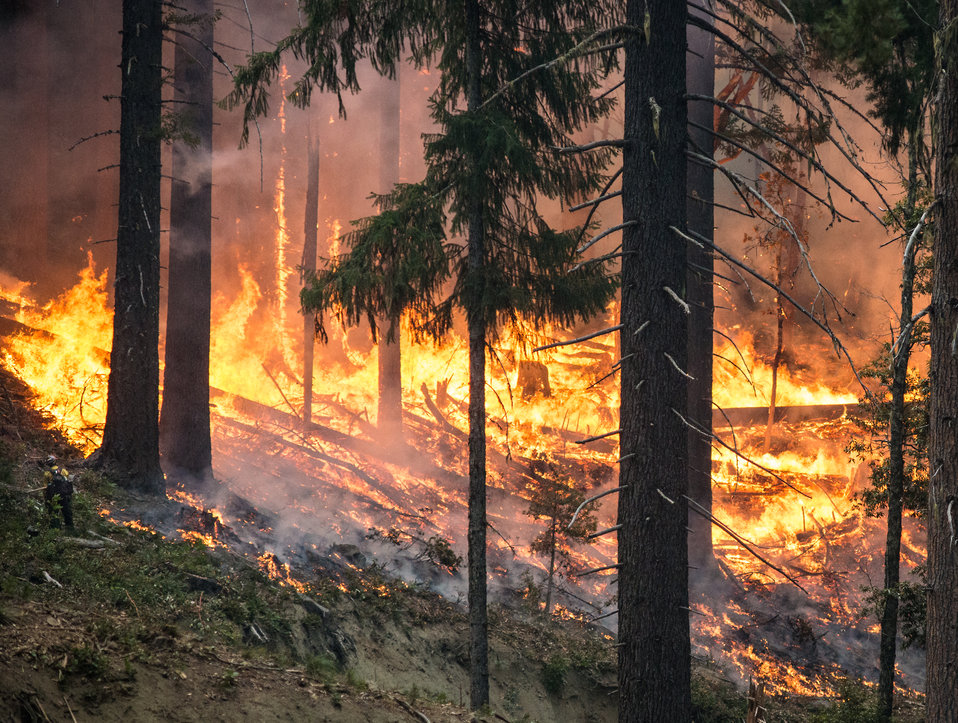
Geronimo Interagency Hotshot Crew, Department of the Interior (DOI) Indian Affairs (IA) Bureau of Indian Affairs (BIA) San Carlos Agency in Arizona; on assignment at the Big Windy Complex Wildlands Fire, approximately 15 miles west of Interstate-5 and East Northeast of Galice, Oregon, conducts a prescribed burn 'burnout' operation to help stop the main fire that may head toward this roadway, on Friday, Aug 9, 2013. The primary mission of the Interagency Hotshot Crews (IHC) is to provide a safe, organized, mobile and highly skilled hand crew for all phases of wildland fire suppression. The arduous duties and specialized assignments required of IHC personnel require uniform staffing, certification, training, equipment, communications, transportation, organization, and qualifications that adhere to interagency standards and guidelines.